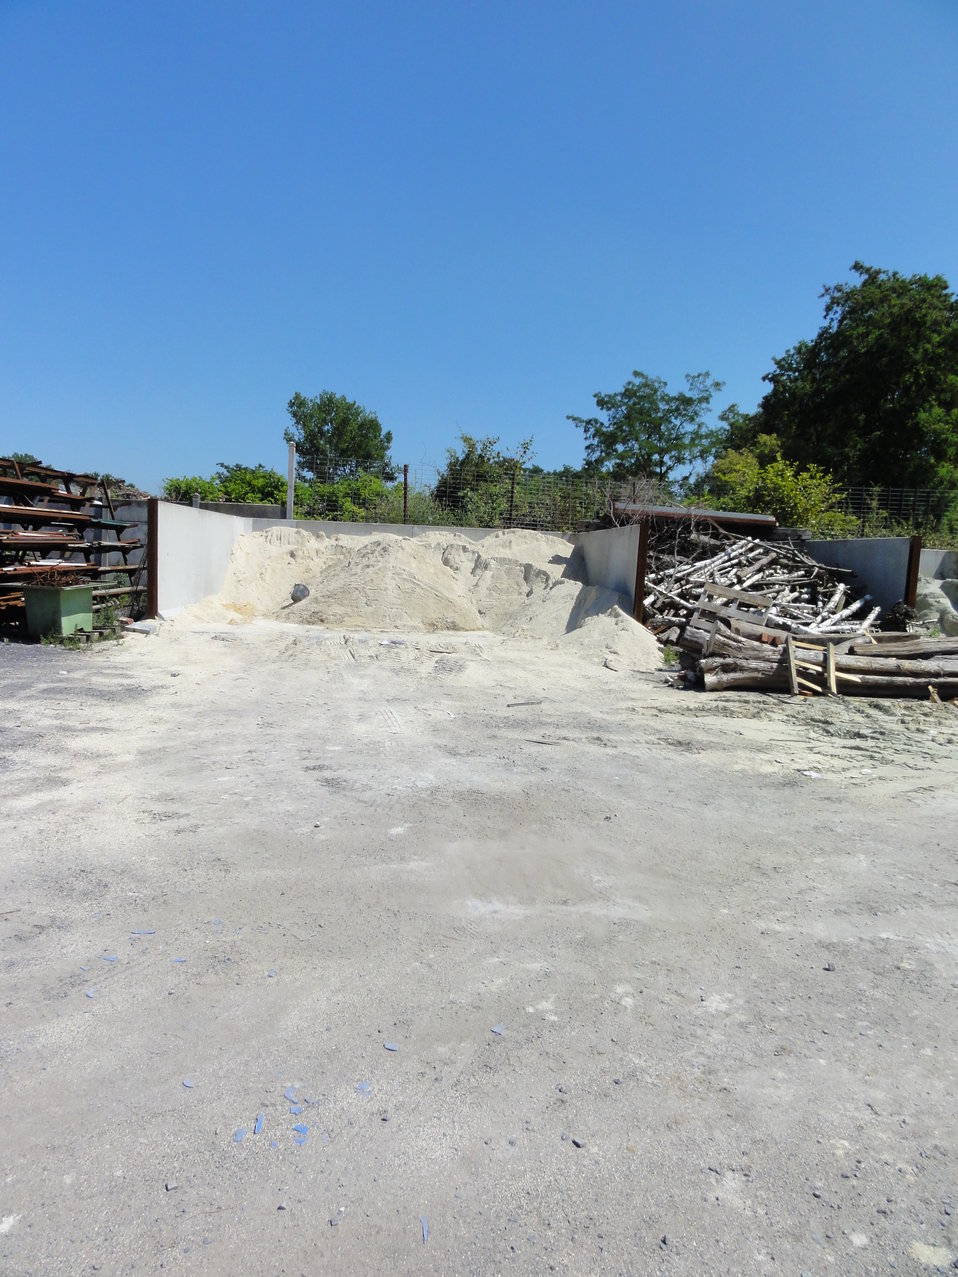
Fran√ßais†: La Fosse Davy de la Compagnie des mines d'Anzin √©tait un charbonnage constitu√© d'un seul puits situ√© √† La Sentinelle, Nord, Nord-Pas-de-Calais, France.